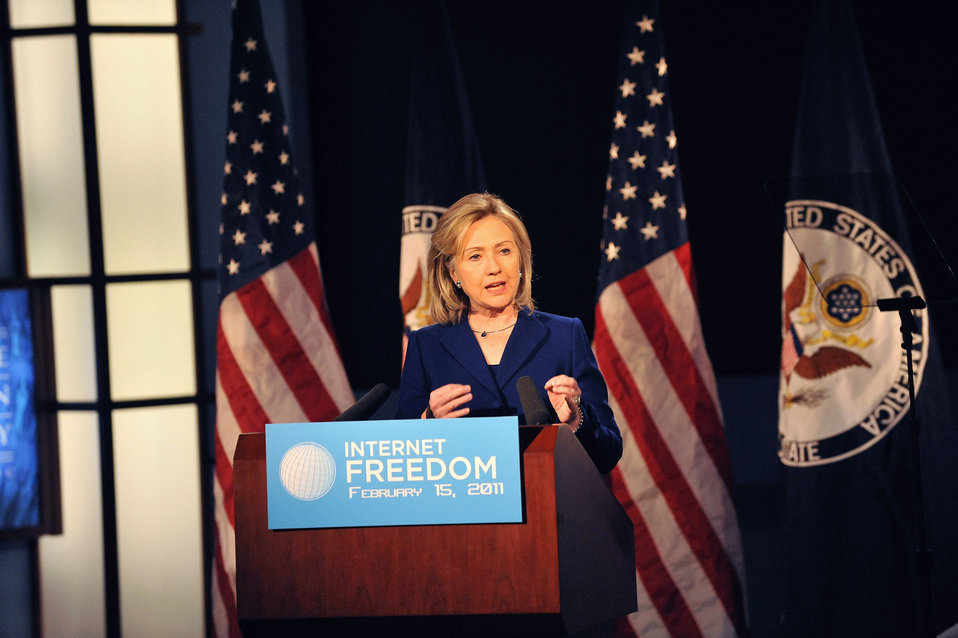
Secretary Clinton Delivers Remarks on Internet Freedom

U.S. Secretary of State Hillary Rodham Clinton delivers remarks on “Internet Rights and Wrongs: Choices and Challenges in A Networked World” at George Washington University in Washington, D.C., on February 15, 2011.